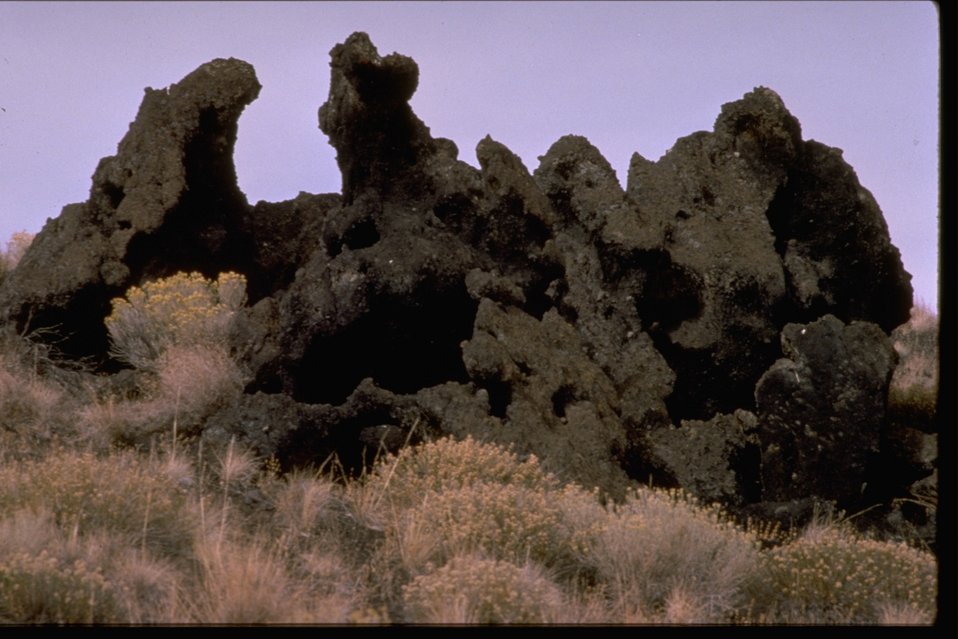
Spitting Cone lava formation.